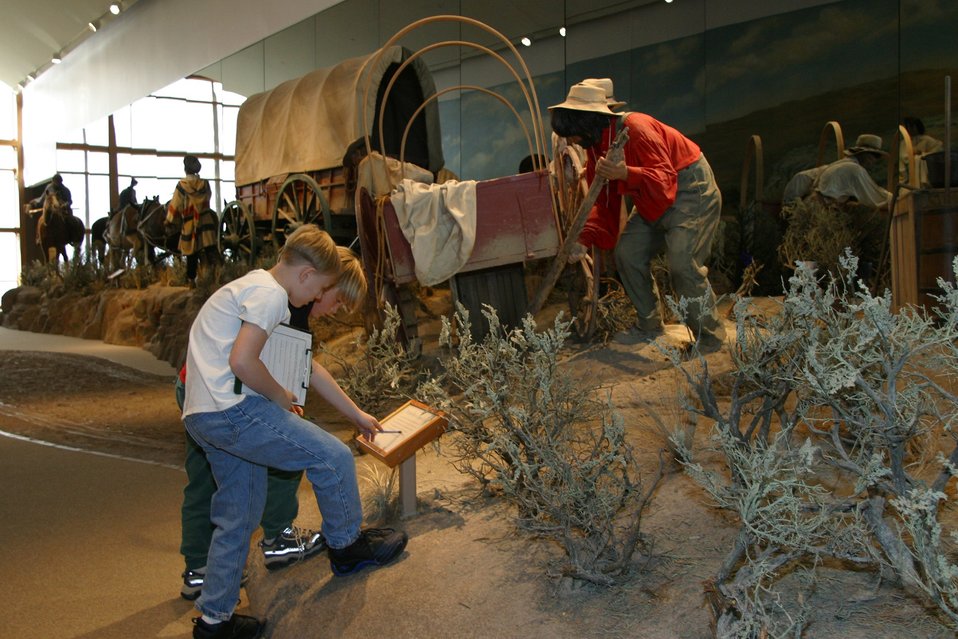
Hundreds of school children visit the National Historic Oregon Trail Interpretive Center every year.